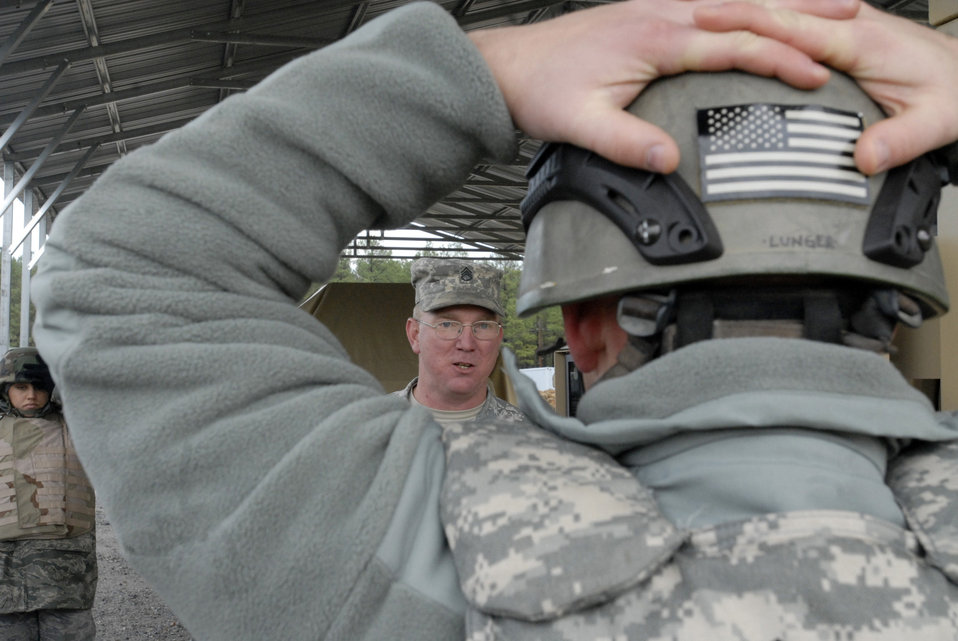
Patriot exercise teaches ISR skills to enhance situational awareness

(Foreground) Staff Sgt. Brian Lunger listens to Army Staff Sgt. Michael Cowan provide feedback during Humvee egress assistance training Dec. 10, 2009 at Fort Pickett. The training was part of Patriot 7, a week-long exercise using intelligence, surveillance and reconnaissance to support irregular warfare missions. Sergeant Lunger is from the 21st Security Forces Squadron.